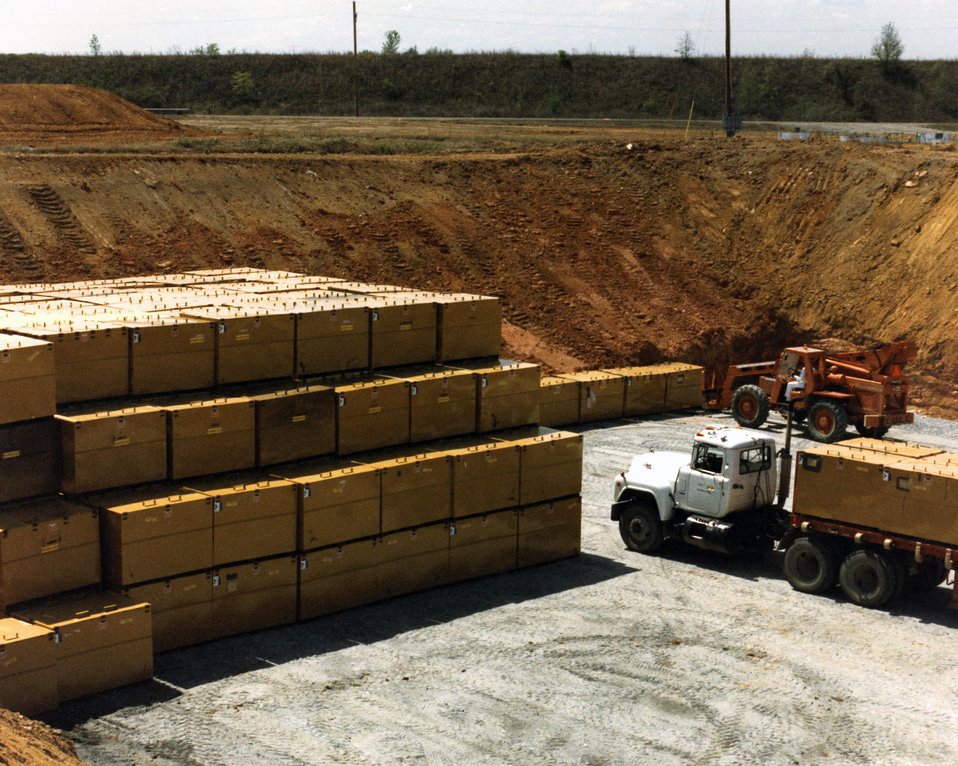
LOW-LEVEL RADIOACTIVE WASTE, PACKAGED IN METAL BOXES, IS STACKED IN PREPARATION FOR BURIAL AT SRS.

THIS PHOTOGRAPH SHOWS THE DISPOSAL PROCEDURE FOR LOW-LEVEL RADIOACTIVE WASTE AT THE SAVANNAH RIVER SITE. METAL BOXES CONTAINING THE WASTE ARE STACKED IN AN ENGINEERED TRENCH. WHEN ALL AVAILABLE SPACE IS USED, EARTH AND A PROTECTIVE COVERING FOR EROSION CONTROL WILL BE PLACED ON TOP OF THE WASTE CONTAINERS.